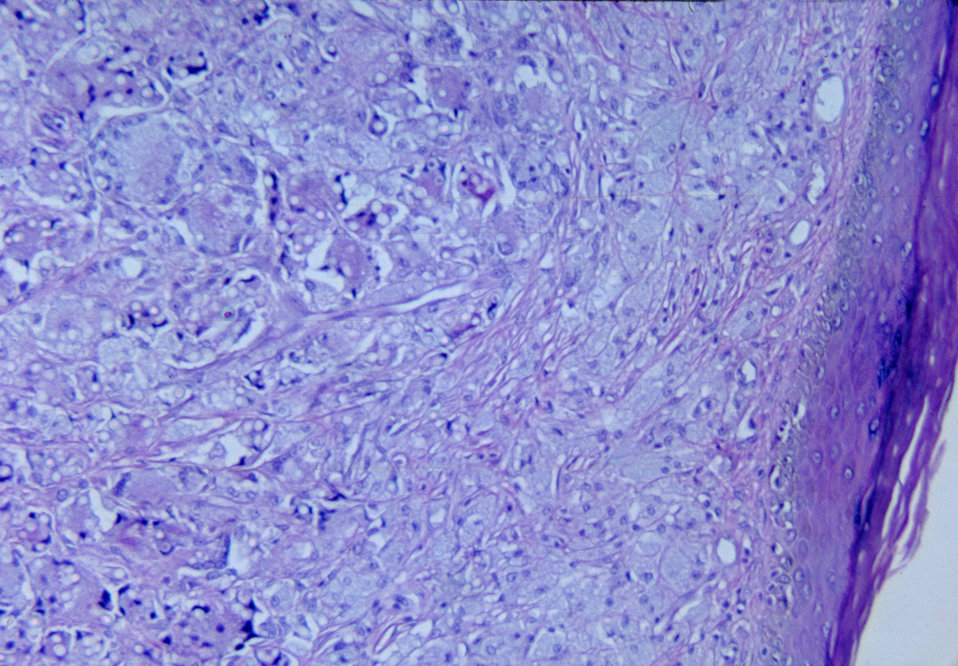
This micrograph depicts the histopathologic changes associated with lobomycosis of the skin.